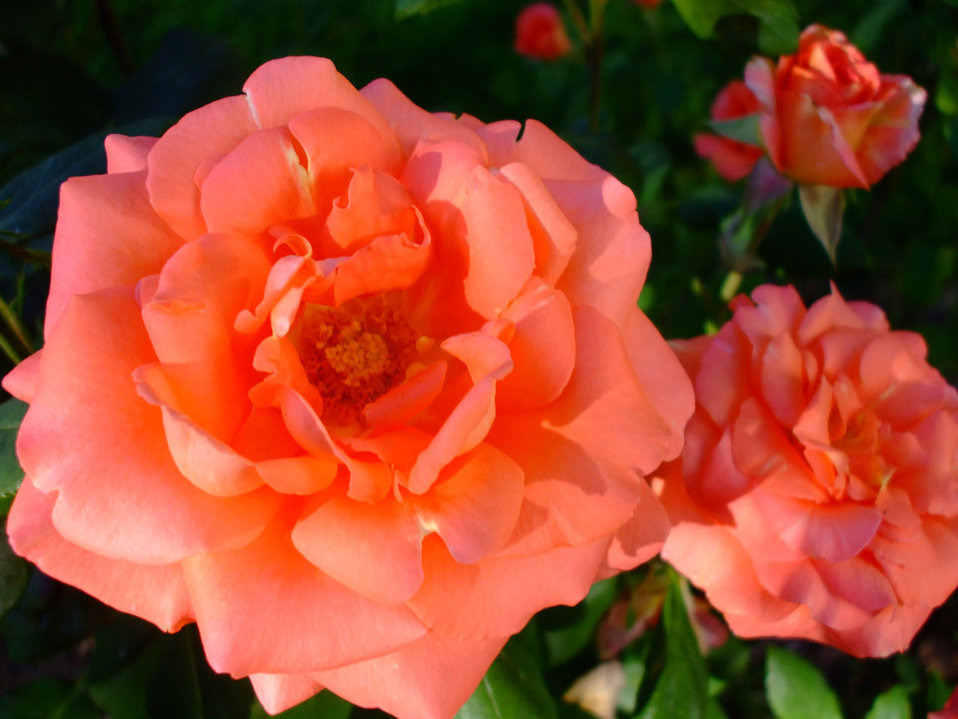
Rose pair

Two coral roses.